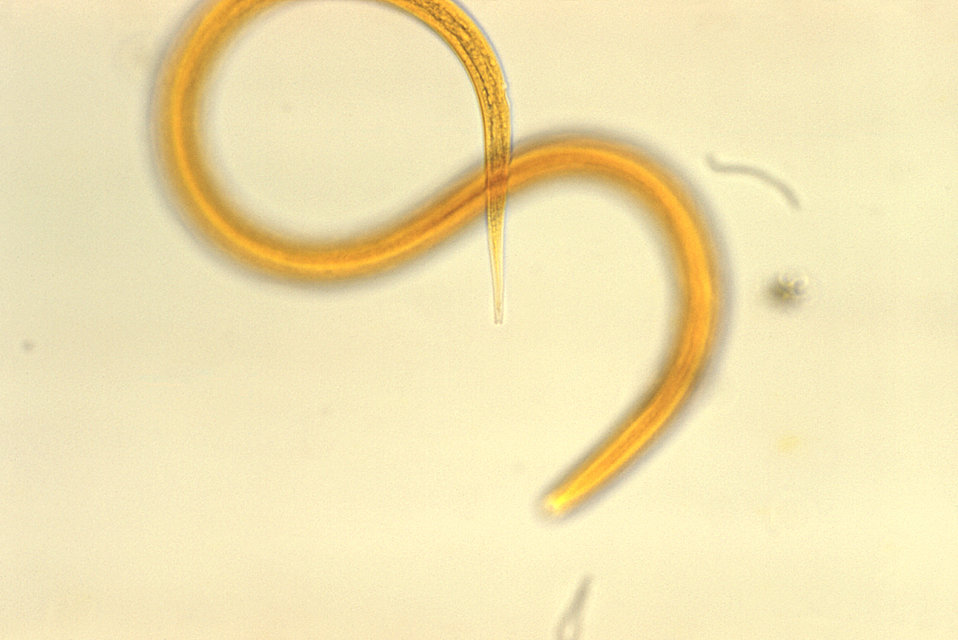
Magnified 400X, this photomicrograph depicted a number of Strongyloides sp. filariform larvae.Laboratory Diagnosis: